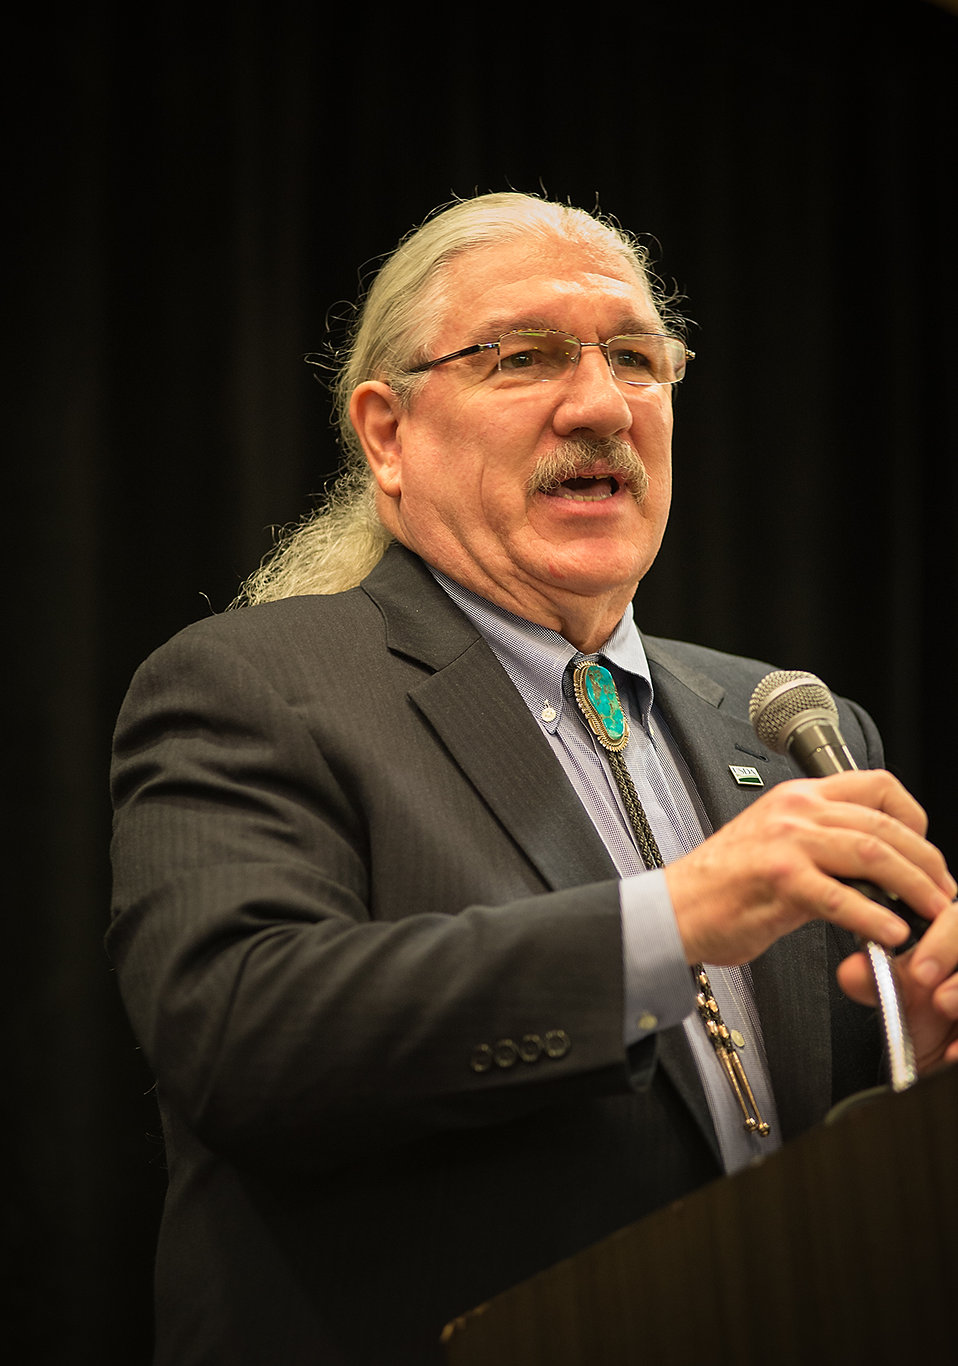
Deputy Under Secretary Butch Blazer delivers the keynote address at the 2014 Environmental Justice Conference in Washington, DC.